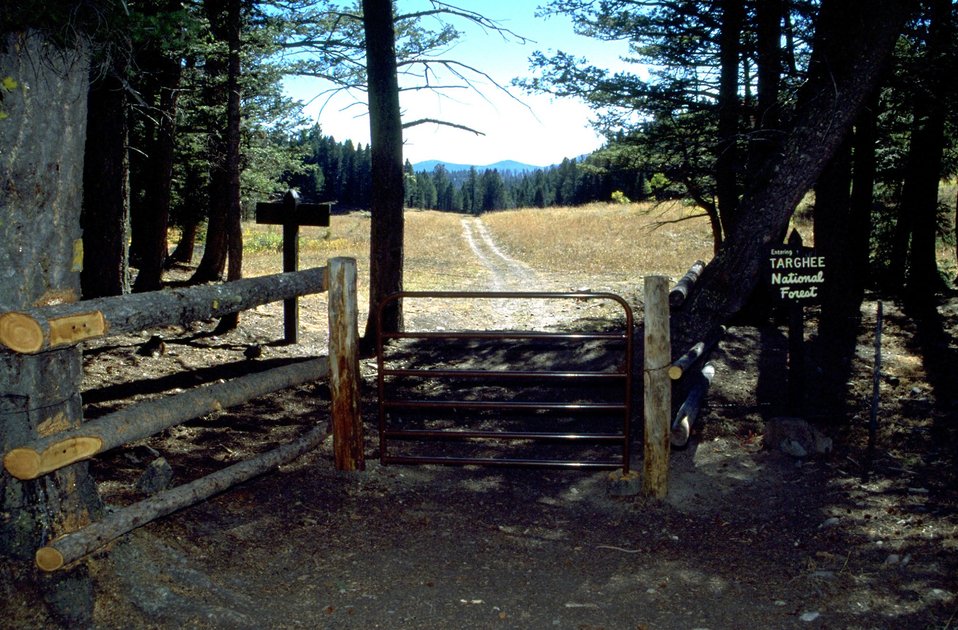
Gate and fence on Montana-Idaho state line with sign marking Targhee National Forest